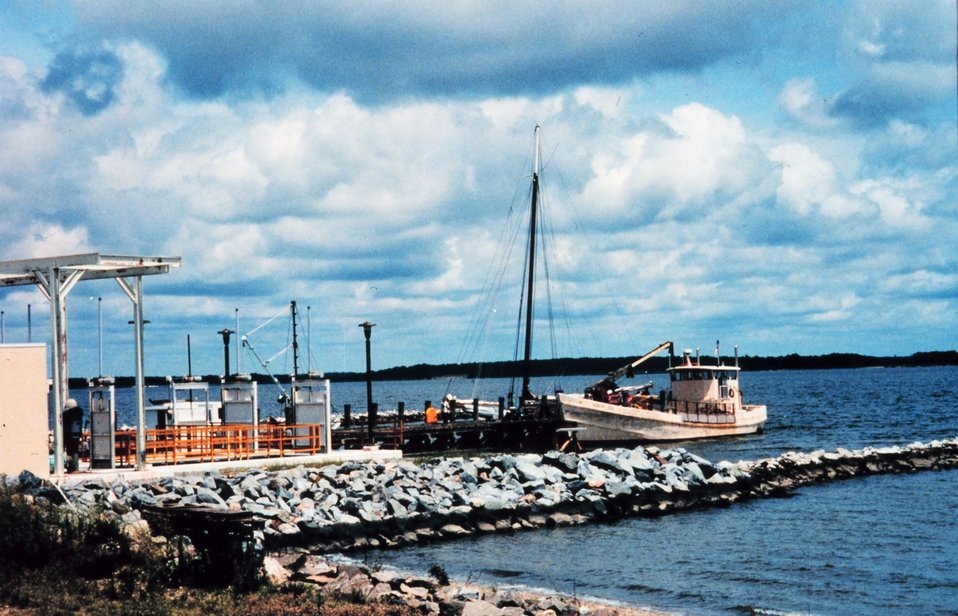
'Buy boat' ROBERT LEE docked at the University of Maryland Horn Point Environmental Laboratory on the Choptank River. Used by the Oyster Recovery Partnership to transplant oyster spat to permanent oyster beds in the Chesapeake Bay.